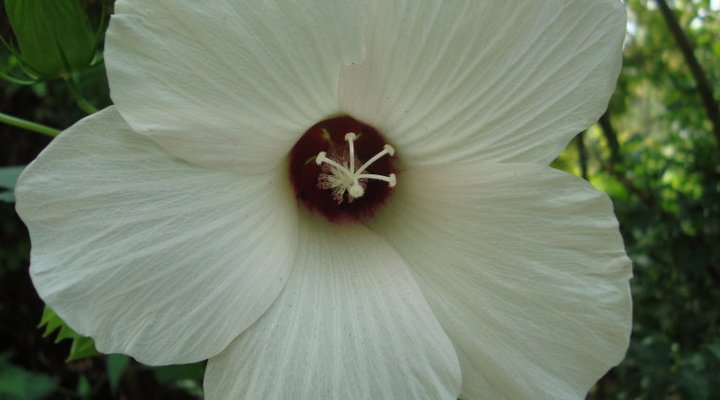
rose mallow

Cypress Creek National Wildlife Refuge, IL